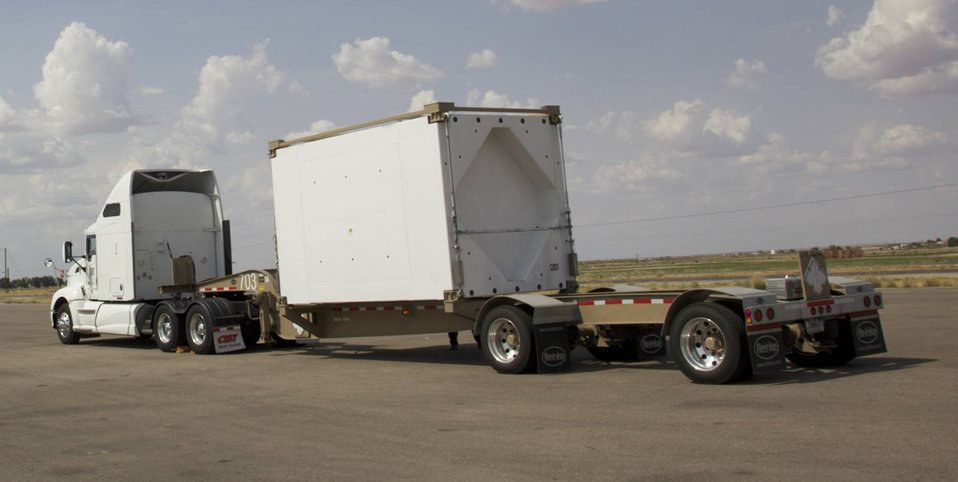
TRUPACT-III - ARRA Funding Provides Another WIPP “First”

The first TRUPACT-III shipment safely arrived at the Waste Isolation Pilot Plant (WIPP) on August 25 after an approximate 30-hour journey from the Savannah River Site (SRS). American Recovery and Reinvestment Act (ARRA) funding allowed for the design and construction of six new TRUPACT-III packages.